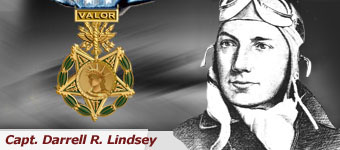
Capt. Darrell R. Lindsey saved the lives of an entire bomber crew and gave his life to do so over the Seine River in France during World War II. His actions earned him the nation's highest military honor, the Medal of Honor.